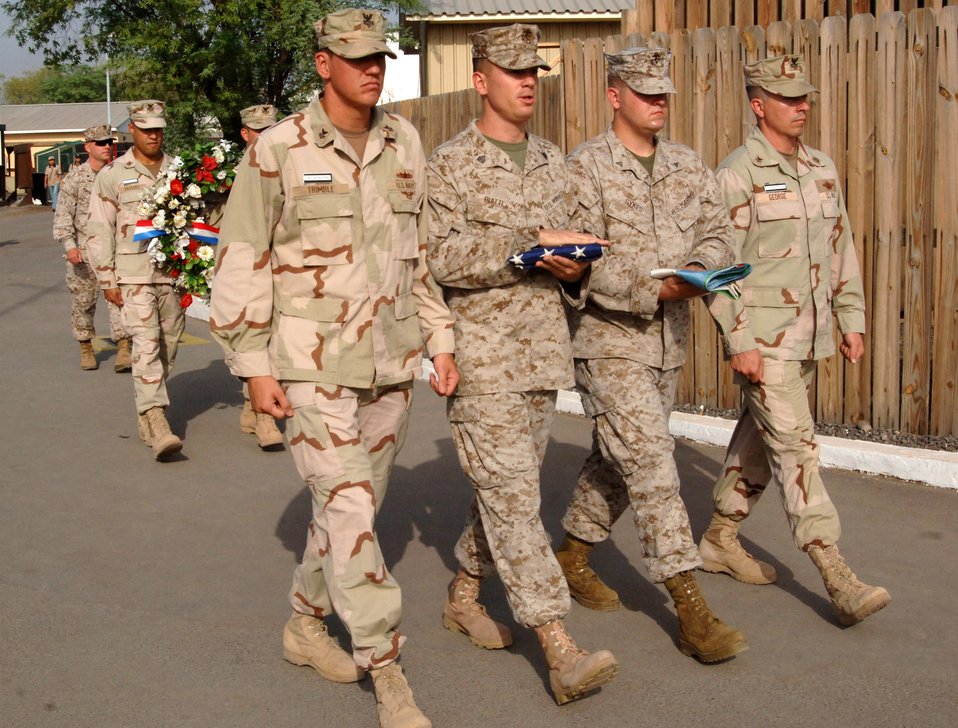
Sept. 11 remembered in Djibouti

Members of the color guard march to the flagpole as Navy petty officers carry a wreath in remembrance of the sixth anniversary of Sept. 11 at Camp Lemonier, Djibouti. The wreath presentation was one of the Sept. 11, 2001, remembrance events sponsored by Combined Joint Task Force-Horn of Africa 2008 Navy chief selectees.